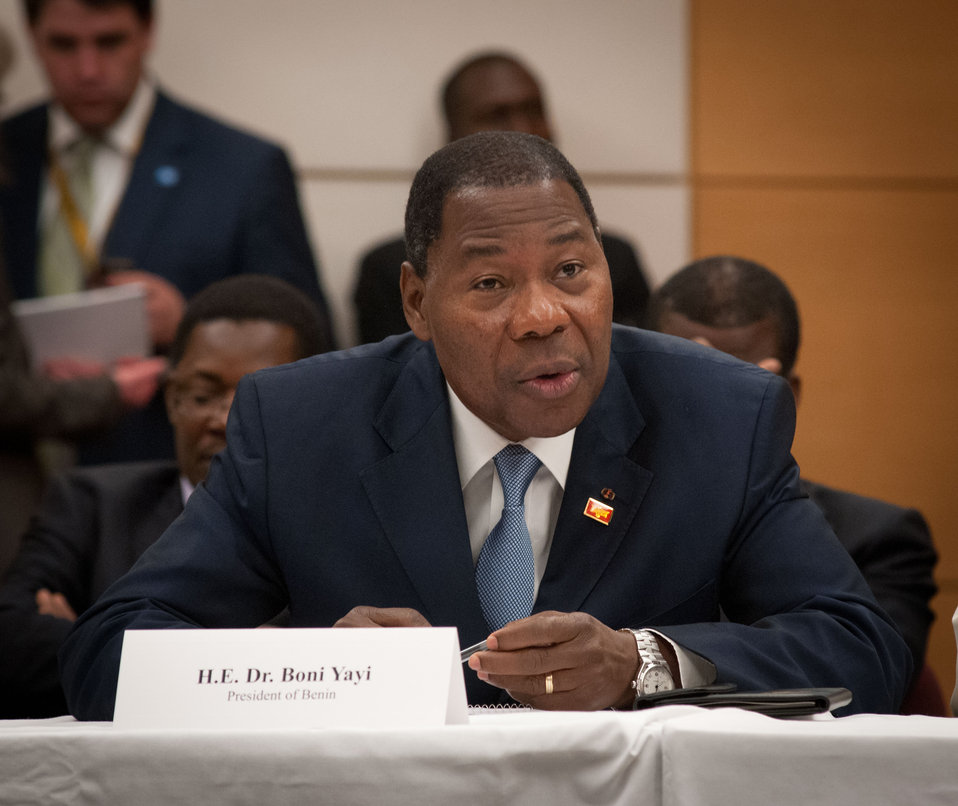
President of Benin His Excellency Dr. Boni Yayi makes remarks at the meeting of African Heads of State conference at the Ronald Reagan Federal Building in Washington, D.C., on Friday, May 18, 2012.